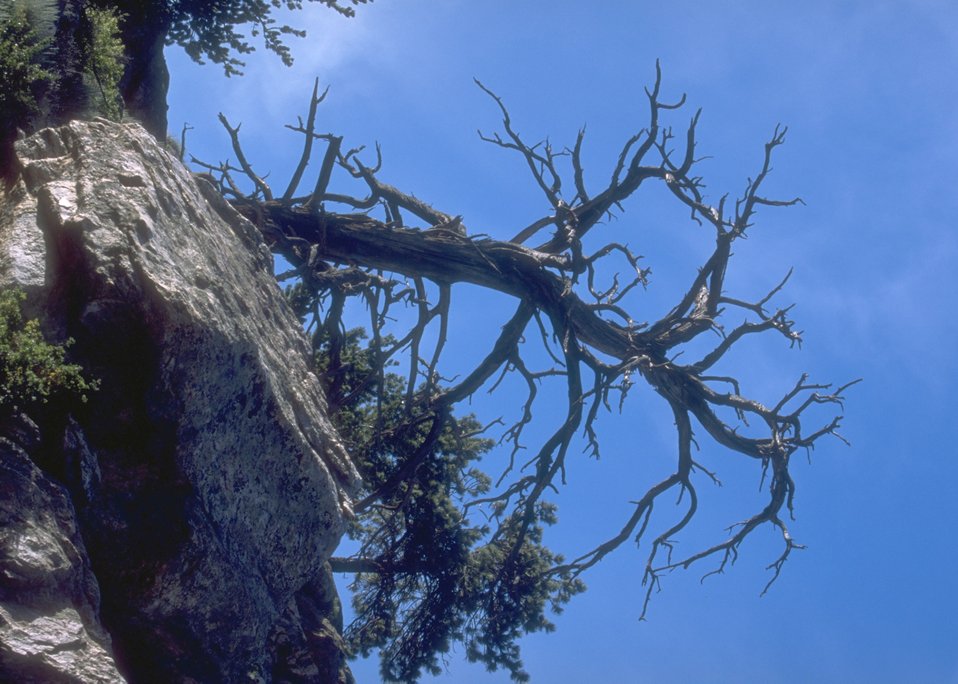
Landscape along the Alcova/Seminoe Back Country Byway, Rawlins Field Office.